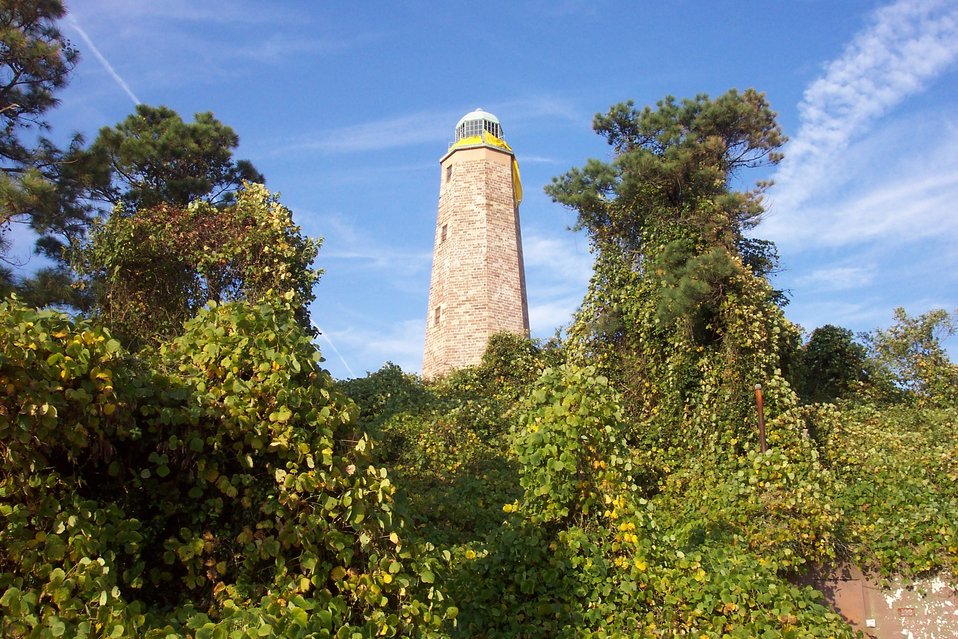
Old Cape Henry Lighthouse with a giant yellow ribbon for the safe return of our troops in Iraq.